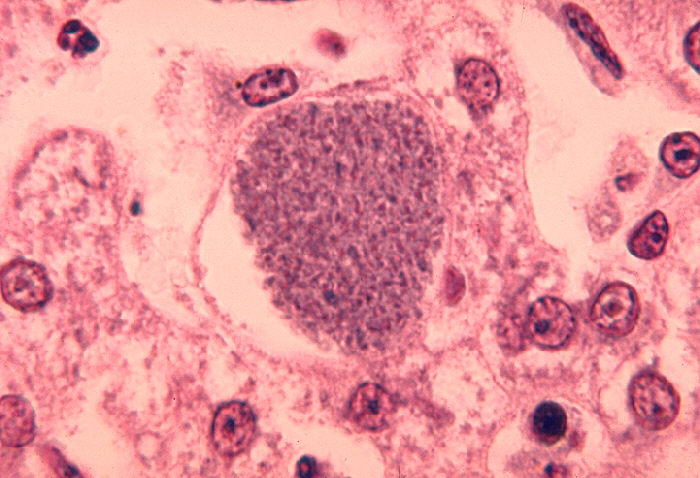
Histopathology of malaria exoerythrocytic forms in liver.